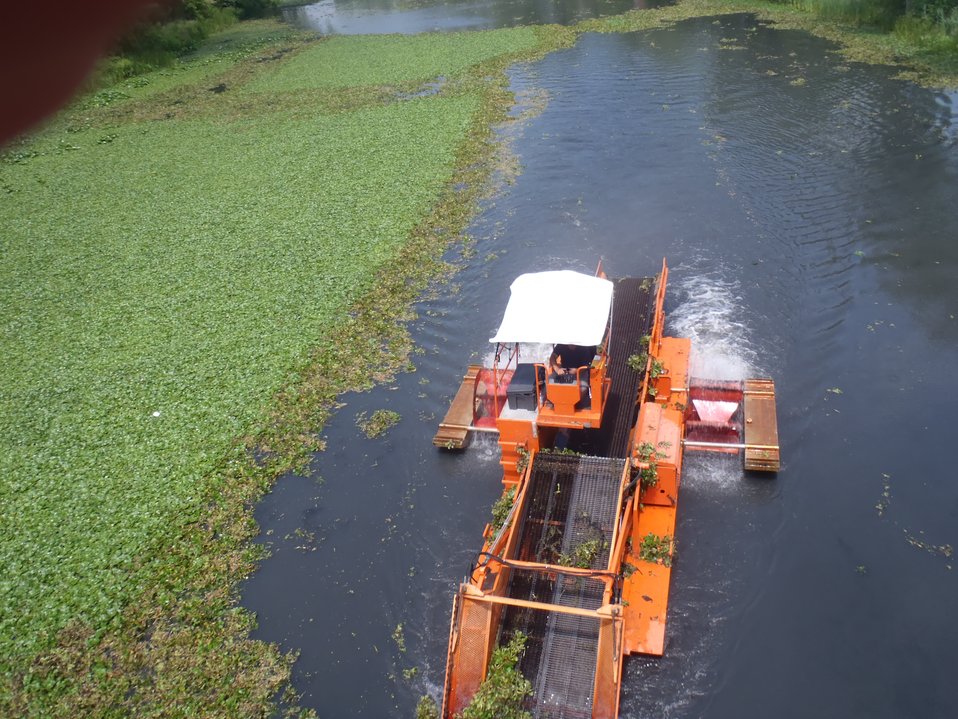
Mechanical Harvesting of Water Chestnut in 2010

The Lower Great Lakes FWCO contracted with mechanical harvesting companies in 2010 and 2011 to remove 6 acres of plants in the Ellicott Creek Park portion of Tonawanda Creek.